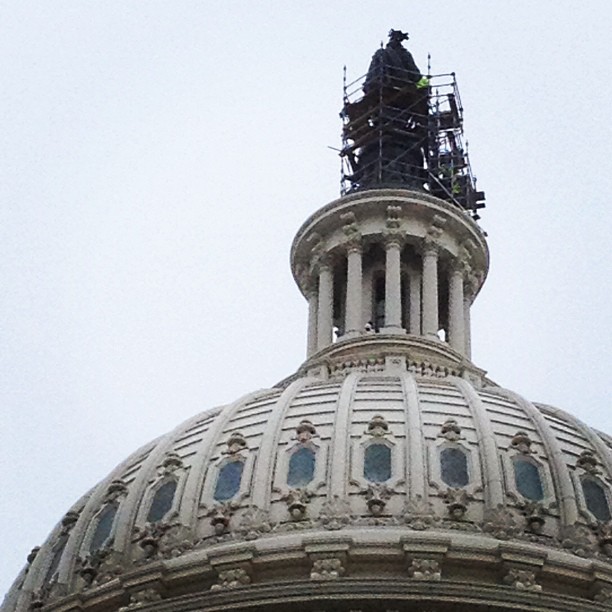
Freedom uncovered, scaffolding being removed, preservation work completed.